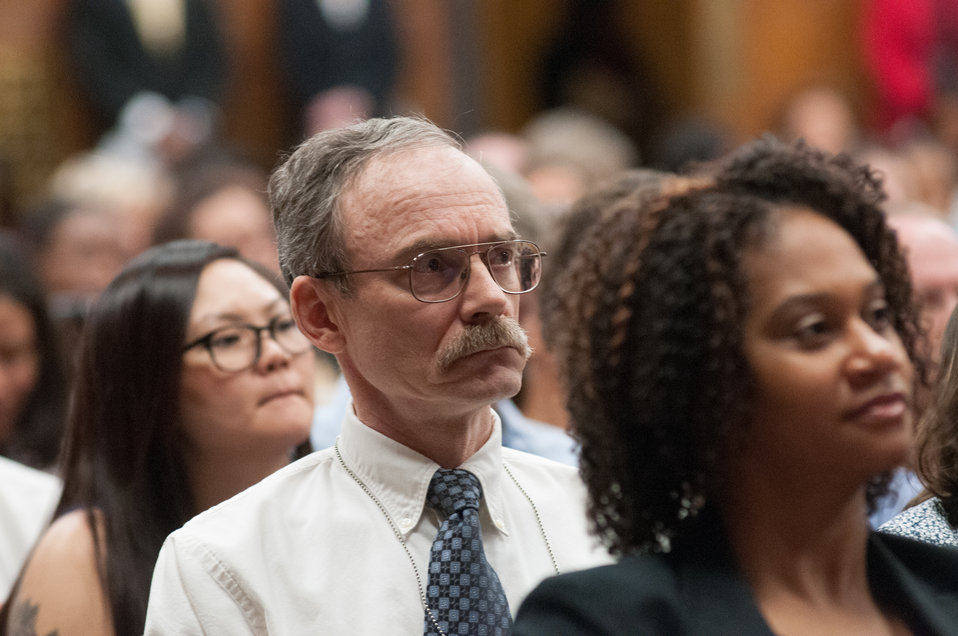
An U.S. Department of Agriculture (USDA) audience listen to the speakers, during the 2013 Women’s History Month Observance event, “Women Inspiring Innovation Through Imagination: Celebrating Women in Science, Technology, Engineering, and Mathematics, on Thursday, March 21, 2013, in Washington, D.C. The keynote speaker is American Association of University Women Executive Director and CEO Linda Hallman. Additional remarks were made by Agriculture Deputy Secretary Dr. Kathleen Merrigan; Rural Development Acting Deputy Under Secretary Judith Canales; Administration Deputy Assistant Secretary Deputy Assistant Secretary Robin Heard; and Agriculture Research Service National Programs Associate Administrator Dr. Chavonda Jacobs-Young.